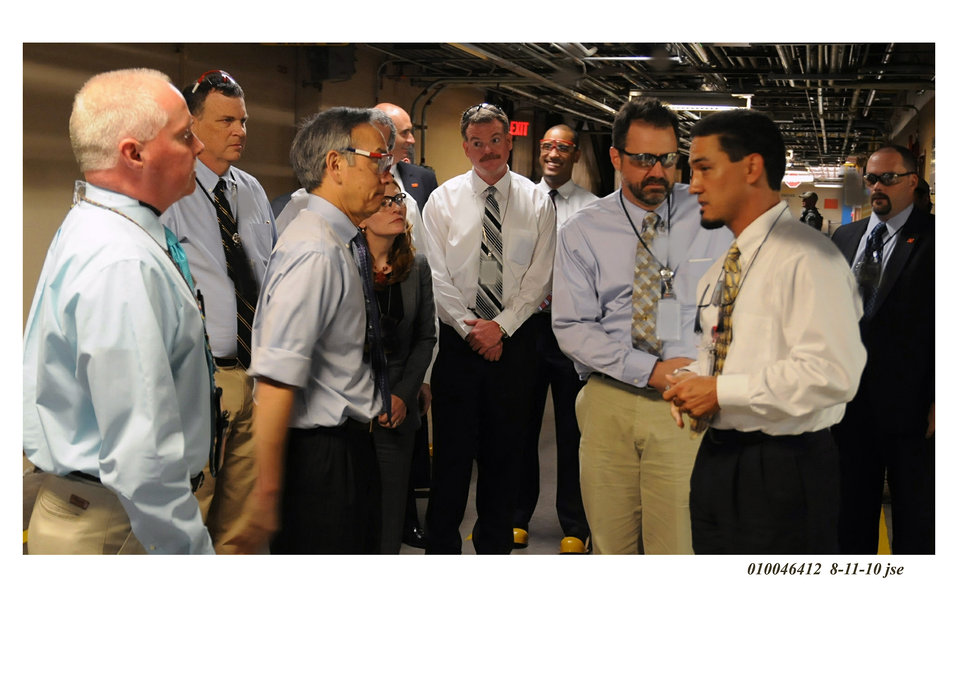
Secretary Chu gets briefed on NNSA’s weapons dismantlement programs during visit to Pantex Plant. (Aug. 11, 2010)